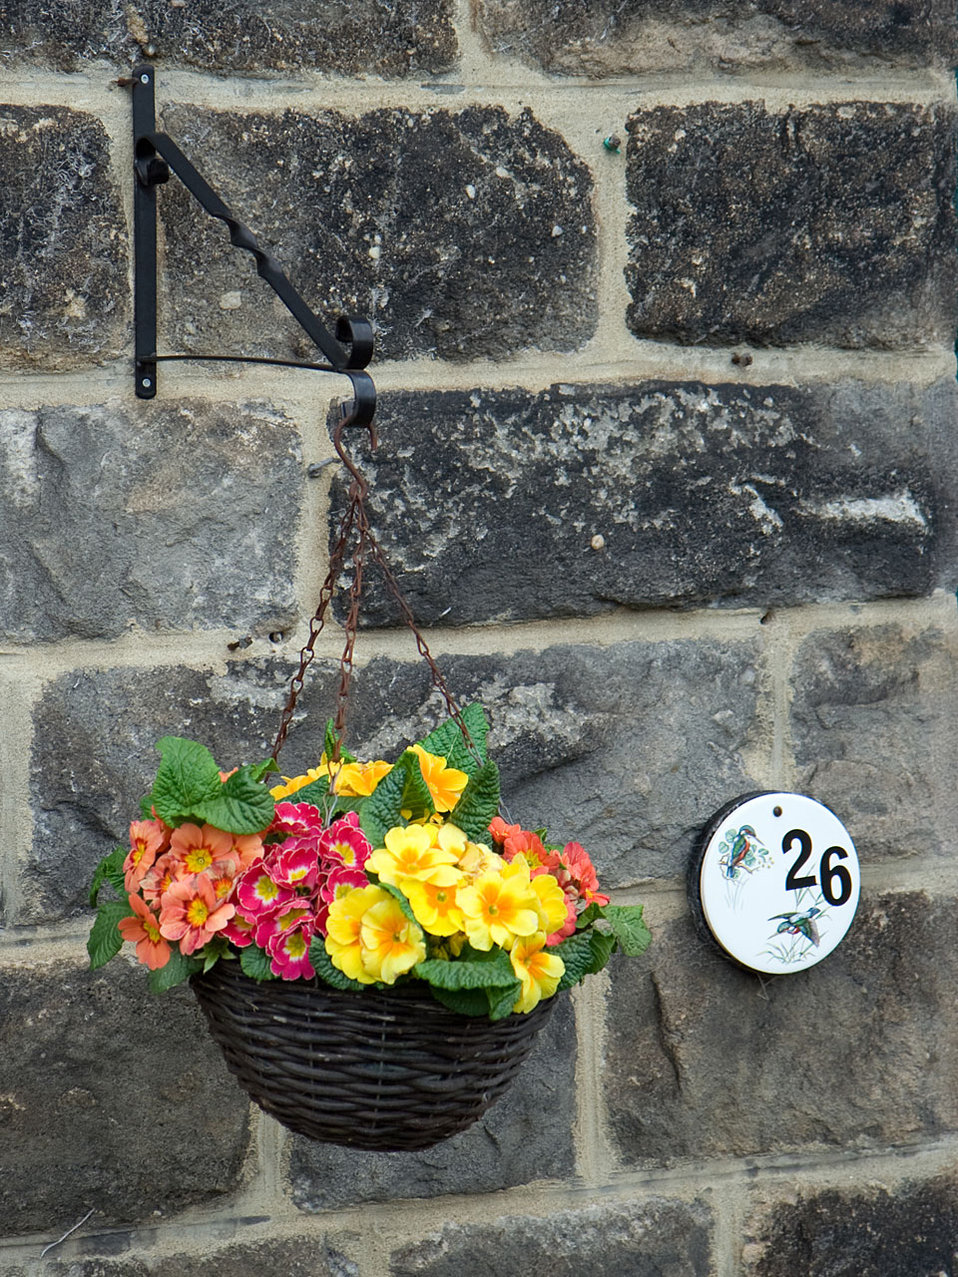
Flower basket

A hanging flower basket on the house wall.